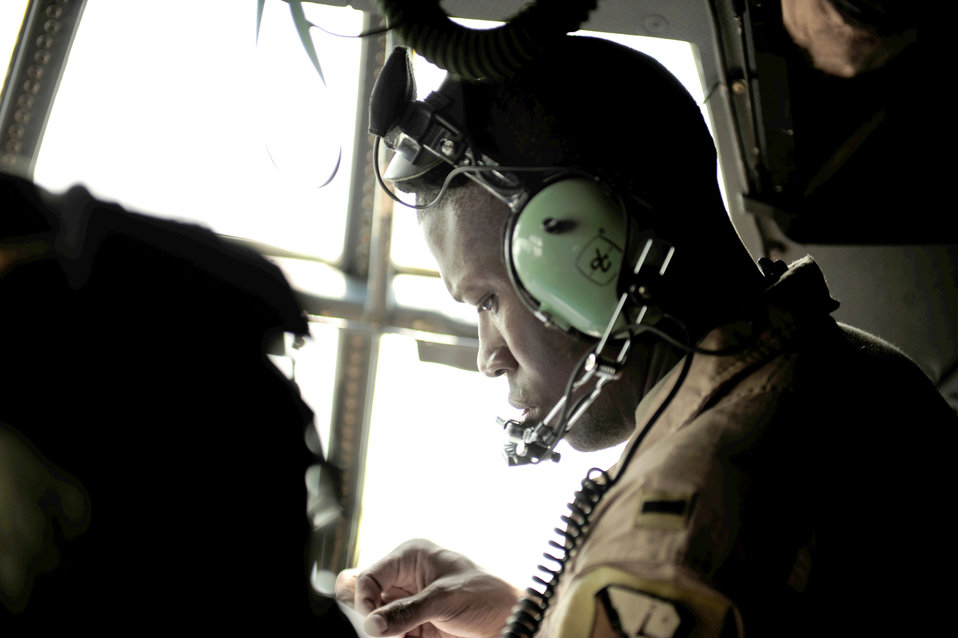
Pakistan flood relief

1st Lt. Jonathan Lipsey looks over maps during flying mission in support of humanitarian relief efforts in Pakistan Aug. 20, 2010. Members of the 746th Expeditionary Airlift Squadron are conducting missions to Pakistan out of Bagram Airfield, Afghanistan. Lieutenent Lipsey is a C-130H Hercules navigator assigned to the 746th EAS.